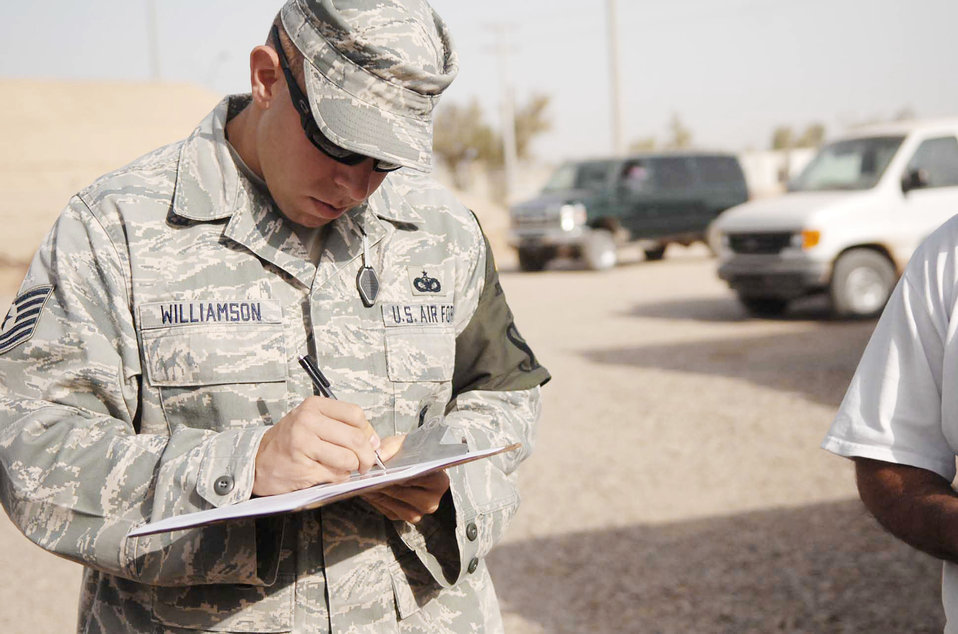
Airmen decrease base threats with random antiterrorism measures

Tech. Sgt. Thomas Williamson notates names of third-country nationals undergoing random antiterrorism measures on base Nov. 6, 2009, at Joint Base Balad, Iraq. The procedures aim to eliminate predictability in the installation's force-protection plan. Sergeant Williamson is the 332nd Expeditionary Security Forces Squadron NCO in charge of operations support.